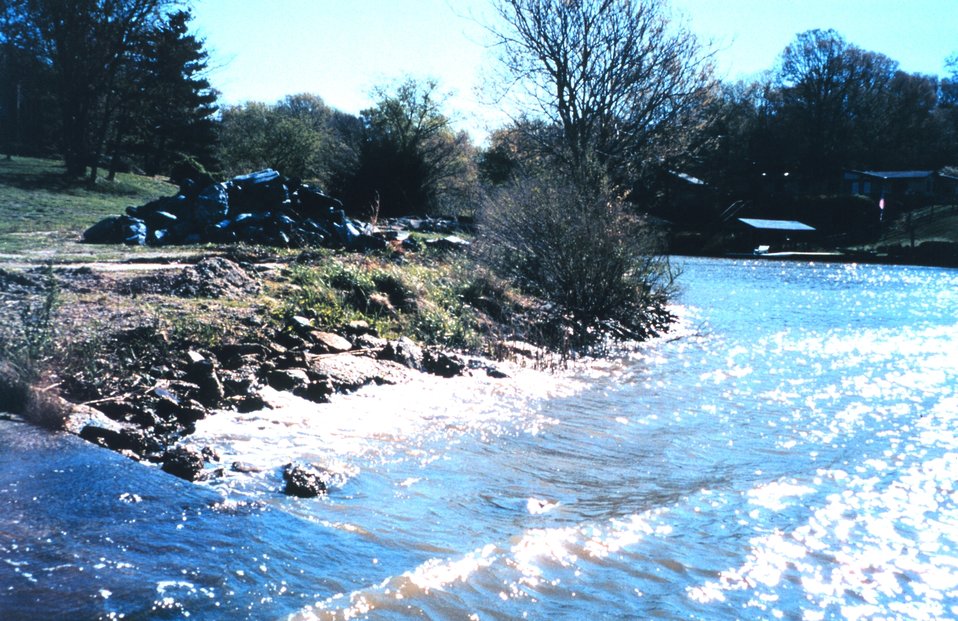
Removal of marsh grasses and SAV's next to this boat ramp have added to erosion problems in the area.